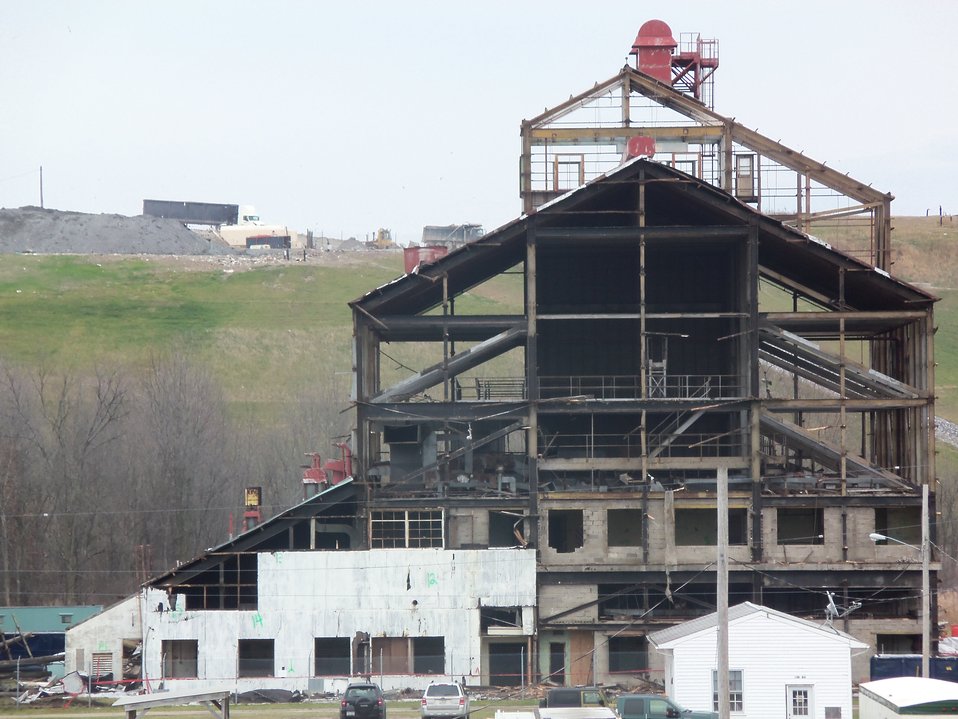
BLDG 401 SHELL VIEW FROM CAP.

Activities from the Niagara Falls Storage Site, which is associated with the former Lake Ontario Ordnance Works. Formerly Utilized Sites Remedial Action Program (FUSRAP), a program initiated in 1974 to identify, investigate and clean up or control sites that were part of the Nation's early atomic energy and weapons program. Activities at the sites that are eligible for FUSRAP were conducted by Manhattan Engineer District (MED) or the Atomic Energy Commission (AEC), both predecessors of the Department of Energy (DOE). The U.S. Army Corps of Engineers was assigned management of FUSRAP by Congress in 1997.